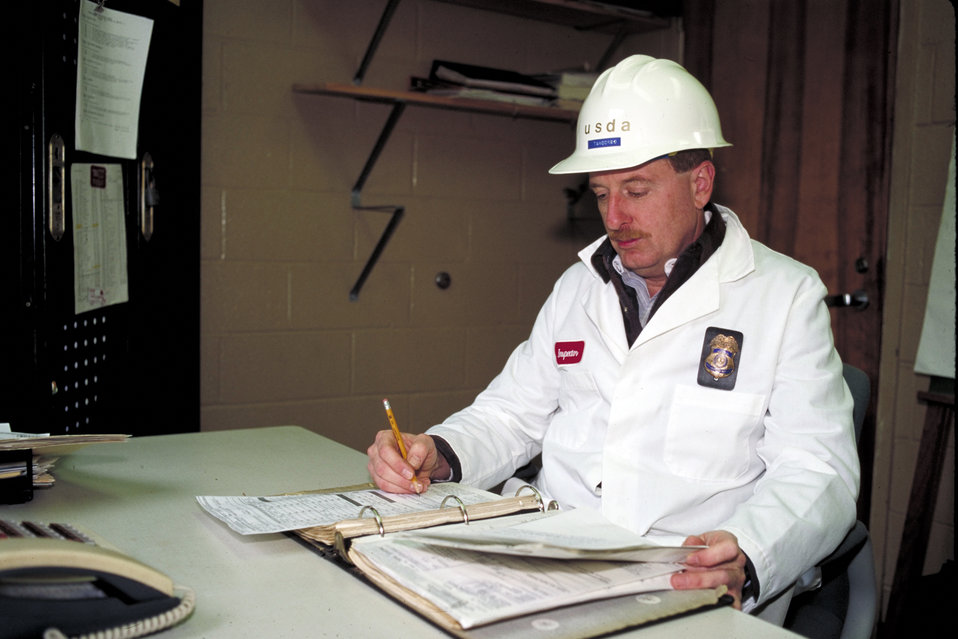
U.S. Department of Agriculture (USDA) Food Safety Inspection Service (FSIS) inspector reviews Hazard Analysis and Critical Control Points (HACCP) records to insure plant is in compliance with their HACCP plan. on June 15, 1995 USDA photo by Lester Shepherd.